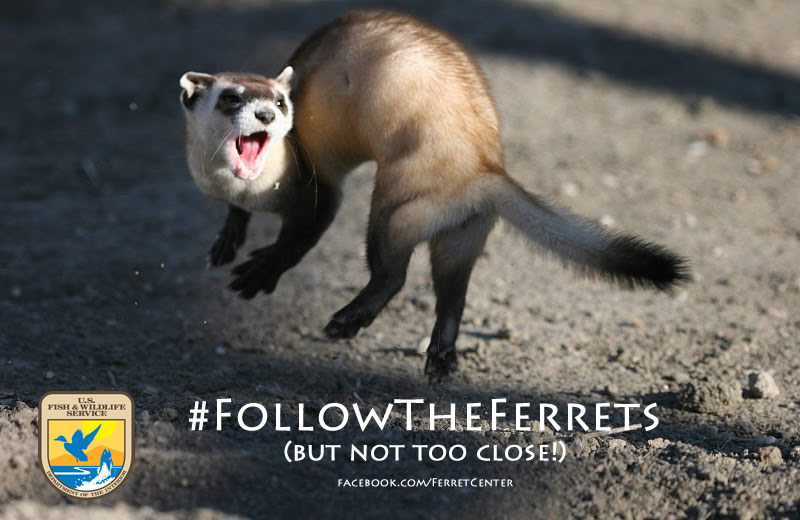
Follow the Ferrets

In 2012 the U.S. Fish and Wildlife Service created a campaign to raise awareness of its efforts to recover the endangered black-footed ferret. Appropriately titled, 'Follow the Ferret' and taking place entirely on Facebook, the project allowed the public to follow the life cycle of the species from birth in a captive breeding facility to release into the wild.